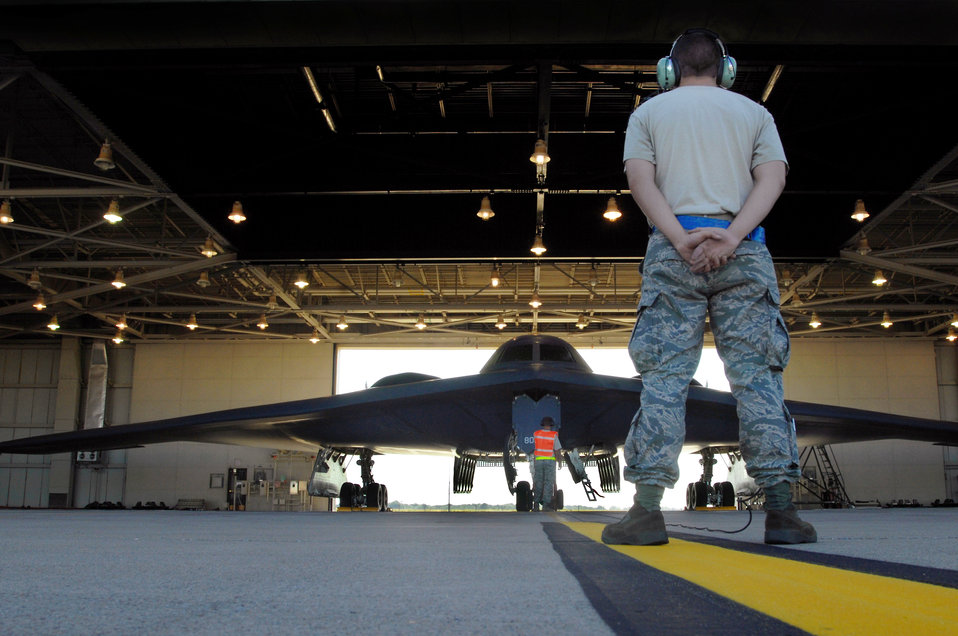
Ready for takeoff

Senior Airman Douglas Anthony stands prepared to marshal a B-2 Spirit out of a hanger for takeoff Aug. 22 at Whiteman Air Force Base, Mo. Twenty B-2s are assigned to the 509th Bomb Wing. Airman Anthony is a crew chief with the 509th Aircraft Maintenance Squadron.